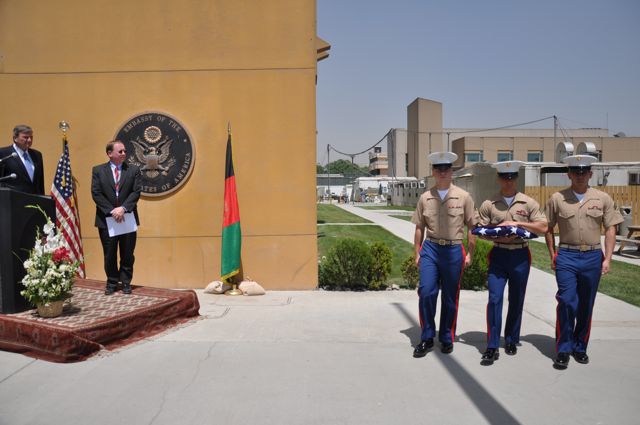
Memorial Day at US Embassy in Kabul